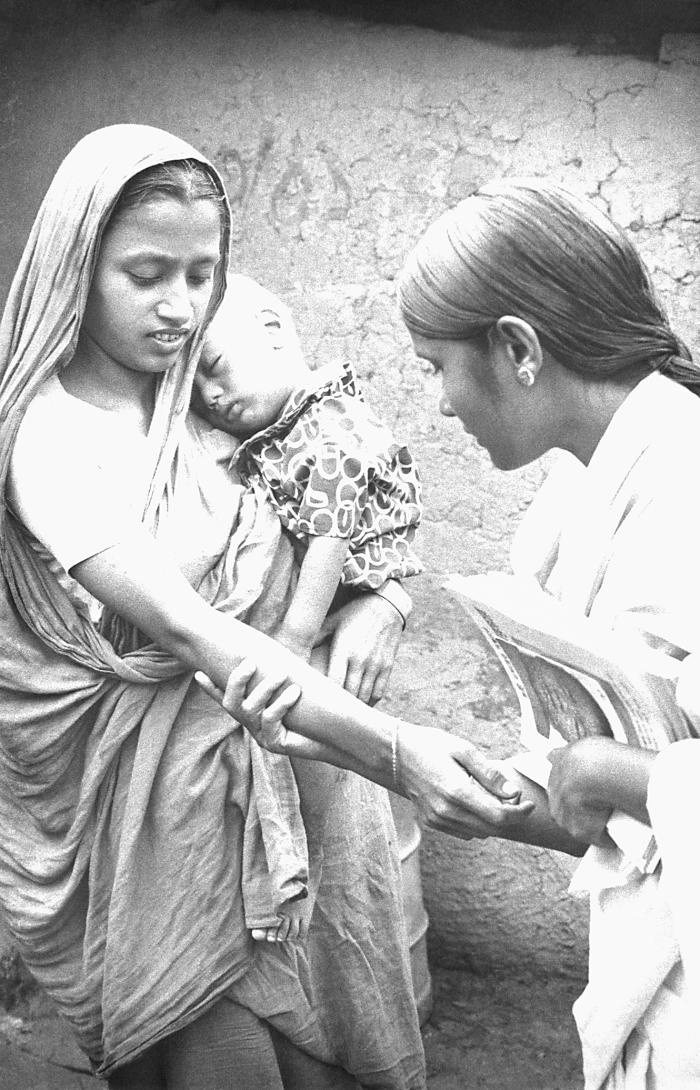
This volunteer smallpox eradication team vaccinator was in the process of checking the smallpox vaccination scar on this mother's right forearm while she was holding her sleeping child, who was resting his head upon his mother's shoulder, and whose vaccination site would next be checked.Normally, individuals should not get the smallpox vaccine if they are younger than 12 months of age. However, the mantra preached by the eradication team members was 'that there was only one type of person who did not need a vaccination - a dead person'. During non-emergency smallpox scenarios, the Advisory Committee on Immunization Practices (ACIP) advises against non-emergency use of smallpox vaccine in children younger than 18 years of age.